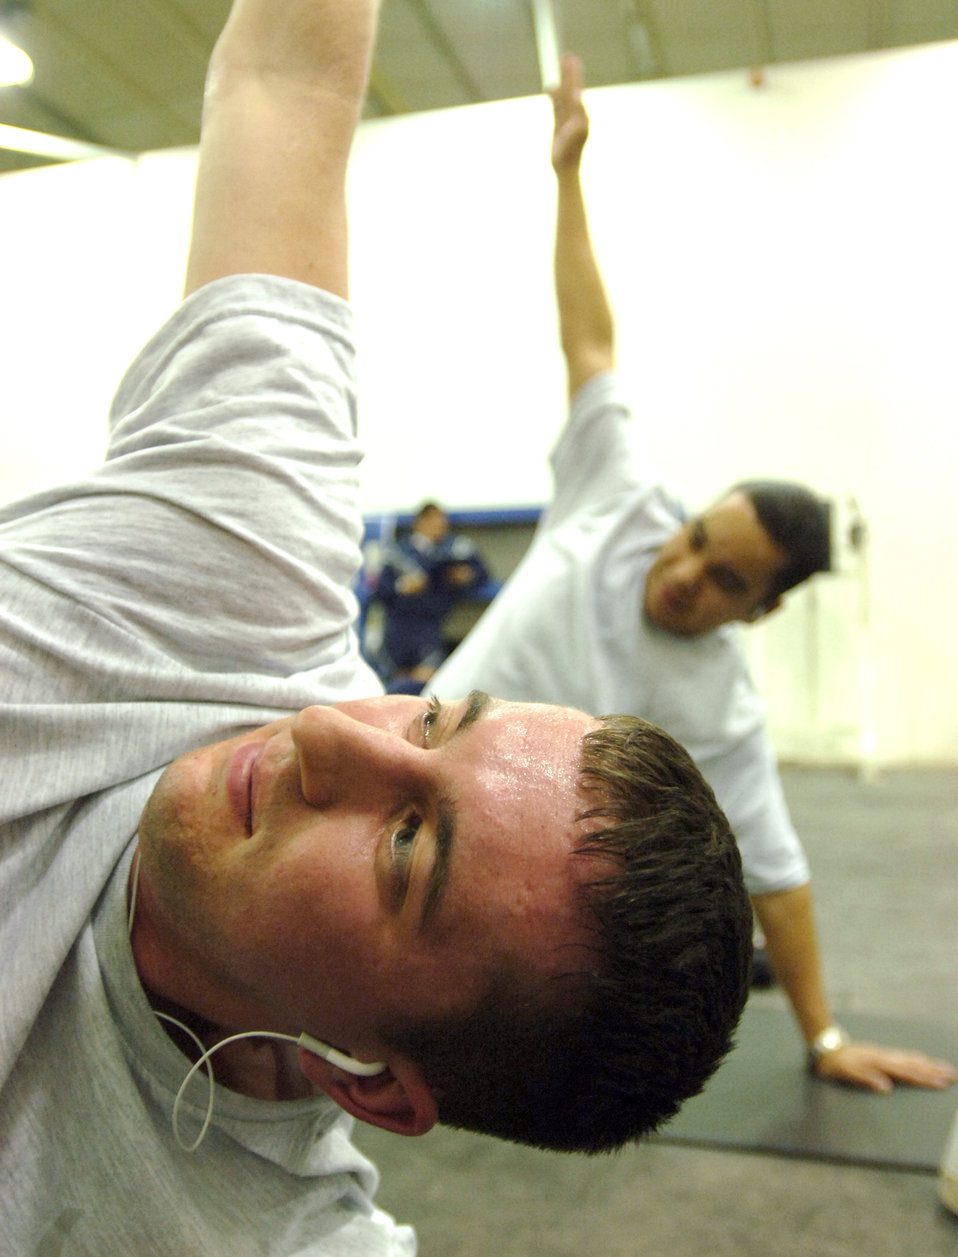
Airmen, Soldiers get to core of crunches

Master Sgt. Marlon Carcamo (left) and Senior Airman Jacalyn Albert stretch it out during an intense abs class Feb 13 in the gym at Balad Air Base, Iraq. Sergeant Carcamo is assigned to the 332nd Expeditionary Logistics Squadron. Airman Albert is assigned to the 332nd Expeditionary Maintenance Squadron.